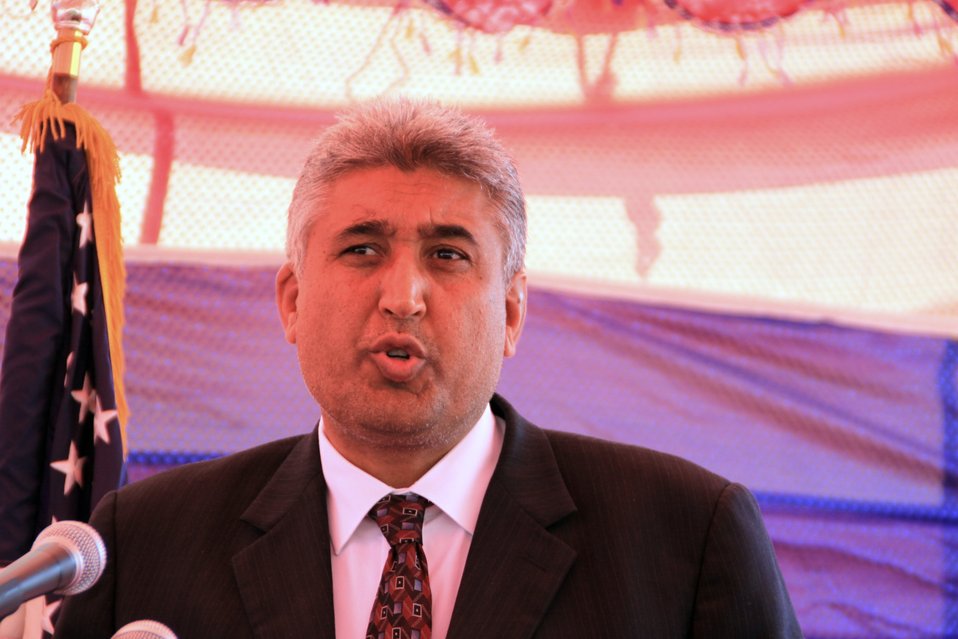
Badam Bagh Farm